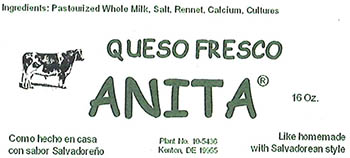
RECALLED – Variety of cheeses

February 23, 2014 – Product Recall – Roos Foods Voluntarily Recalls Variety of Cheeses (listed below) Due to Possible Health Risk.